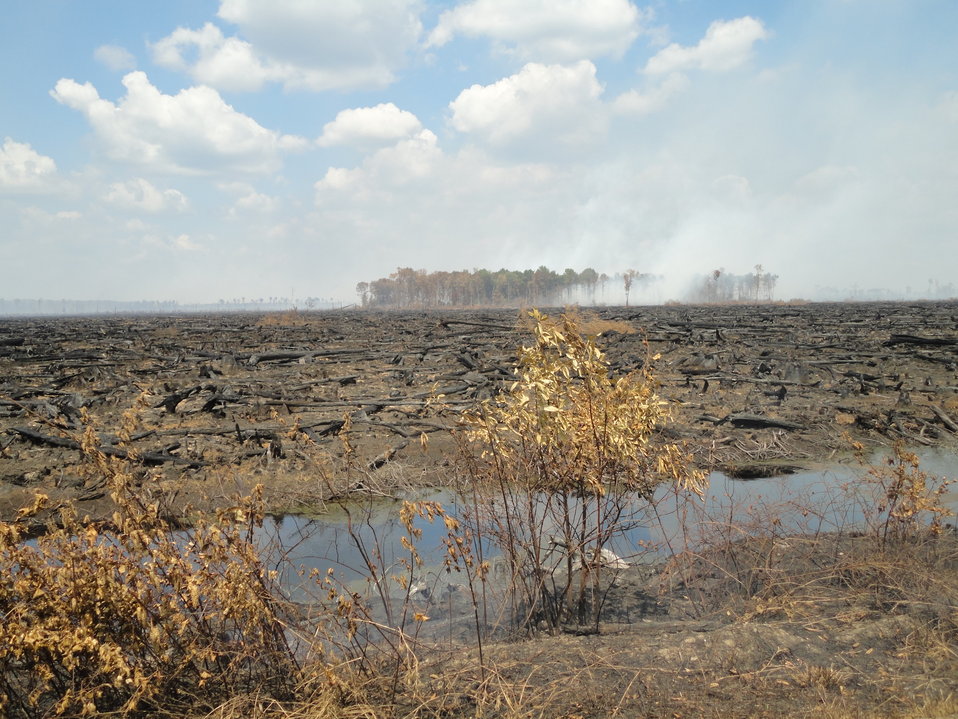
Lateral West Wildfire

Suffolk, VA, Aug. 2011: The Lateral West Fire on Great Dismal Swamp National Wildlife Refuge burned through Atlantic white cedar restoration areas These ares were also burned in the 2008 South One Fire.